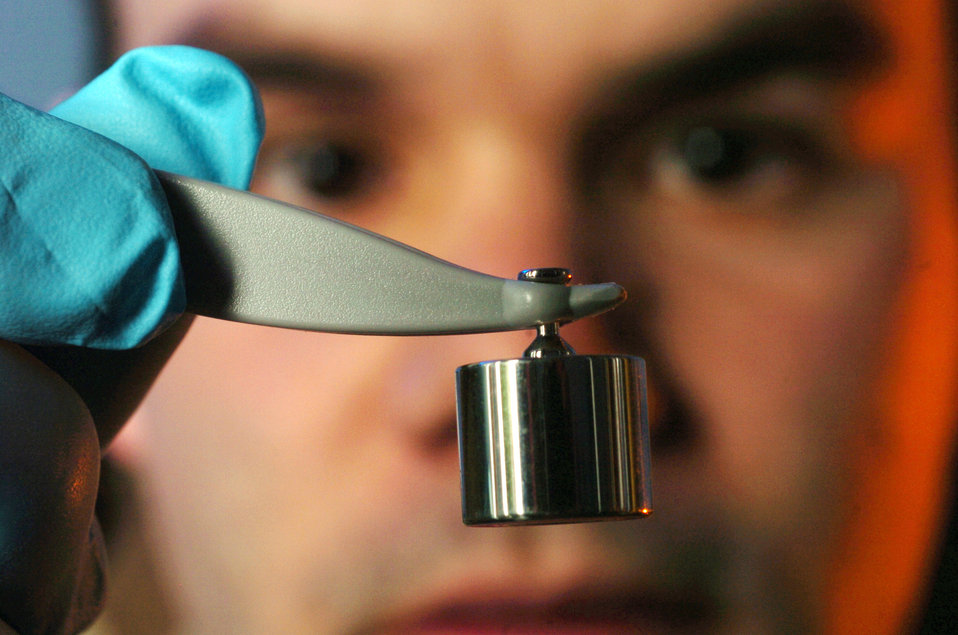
Balanced business

YOKOTA AIR BASE, Japan -- Staff Sgt. Keith Malloy examines standard weights on precision balance equipment during a routine check here. He is a precision measurement equipment laboratory technician assigned to the 374th Maintenance Squadron.